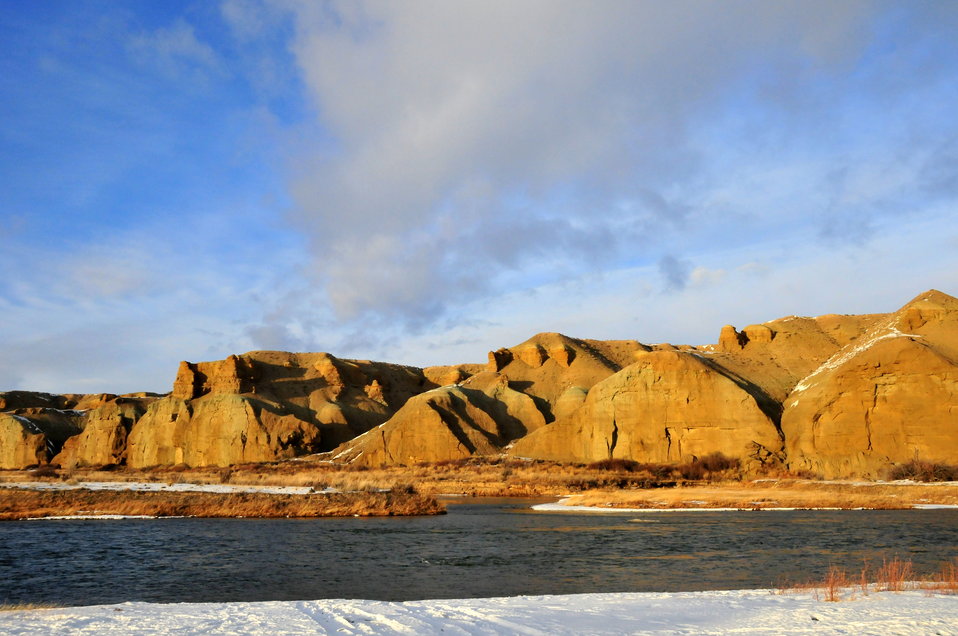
Green River on Seedskadee NWR Near McCullen Bluff

The sun sets on the Green River at Seedskadee NWR with McCullen Bluff in the background.